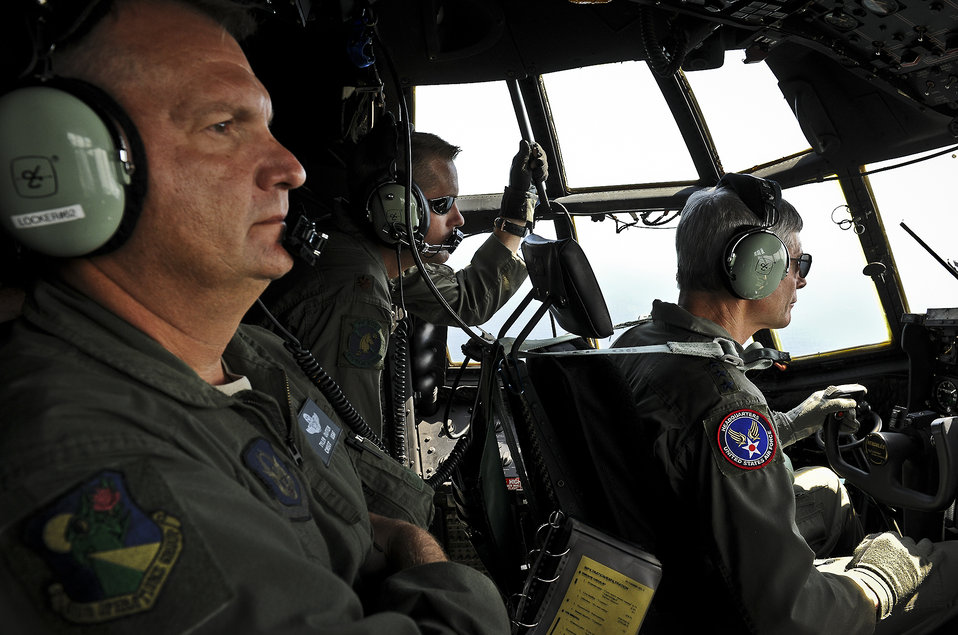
CSAF in the seat on his fini-flight

Chief Master Sgt. Tyler Outten and Maj. William Palmatier watch as Air Force Chief of Staff Gen. Norton Schwartz flies an MC-130E Combat Talon I July 12, 2012, during his last flight as an active duty officer. The MC-130E Combat Talon I crew conducted a local training sortie during the mission that also served as Schwartz’s “fini flight” in the Air Force. Outten and Palmatier are reservists with the 919th Special Operations Wing.